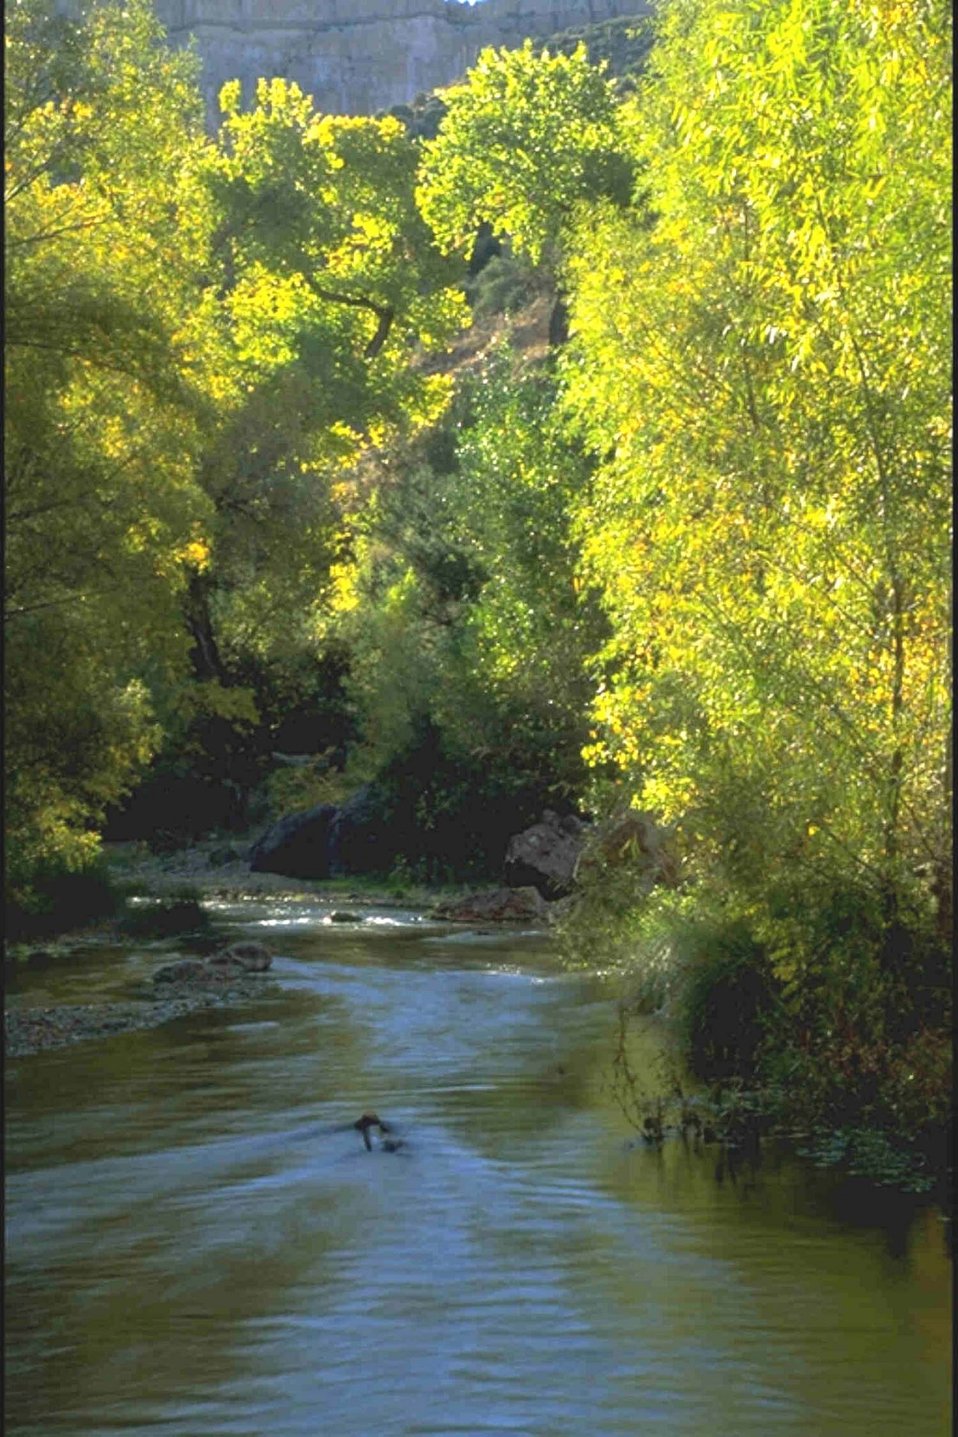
The sun illuminates turning colors on an autumn day near Hell's Half Acre Canyon.